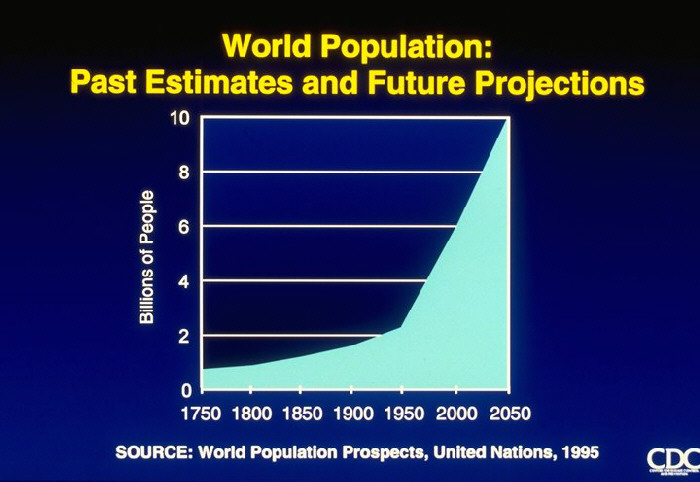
World population graph

A graph showing world populuation, including past estimates and future projections.